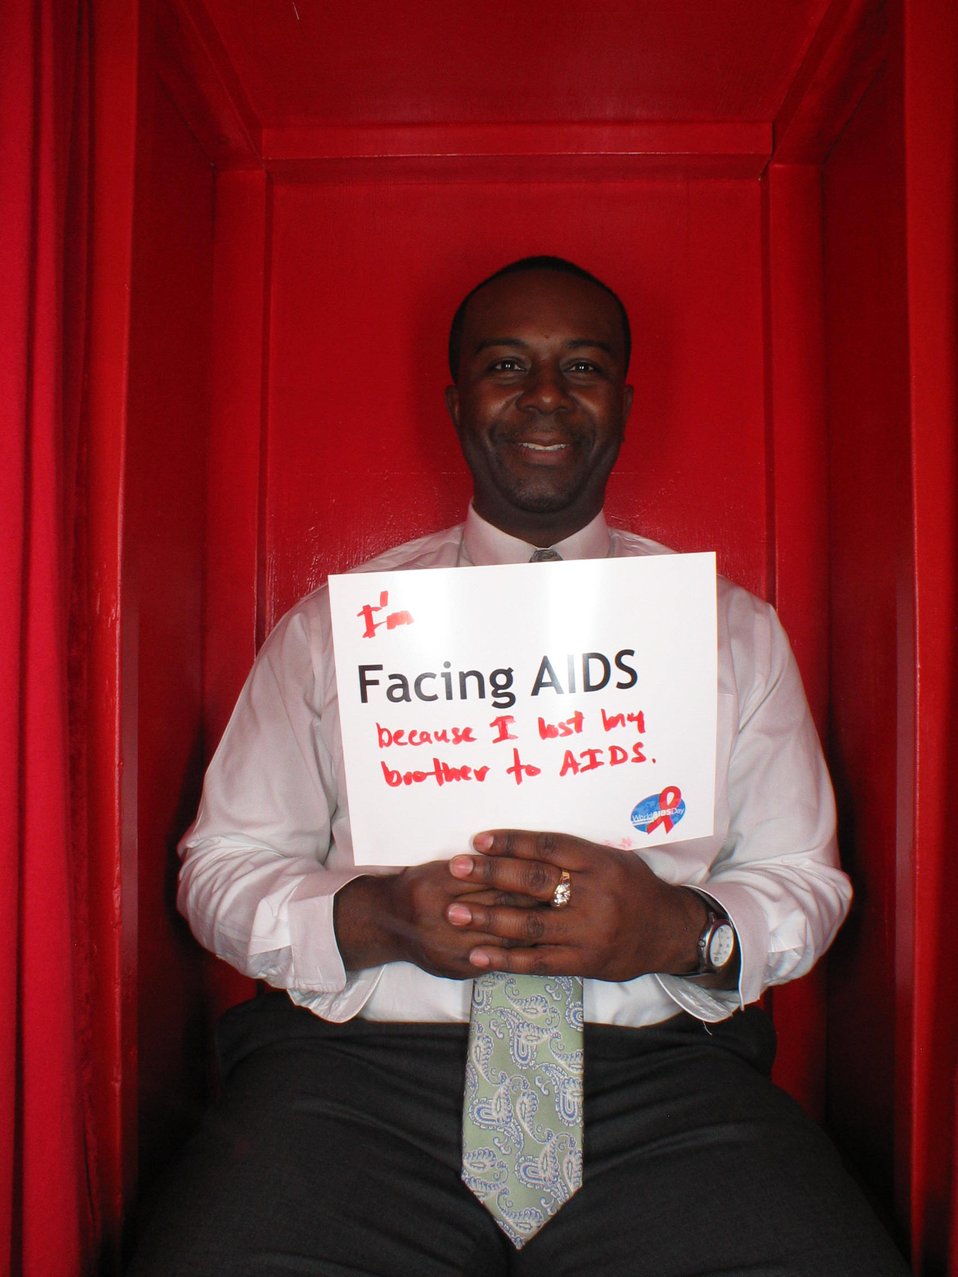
I'm Facing AIDS because I lost my brother to AIDS.